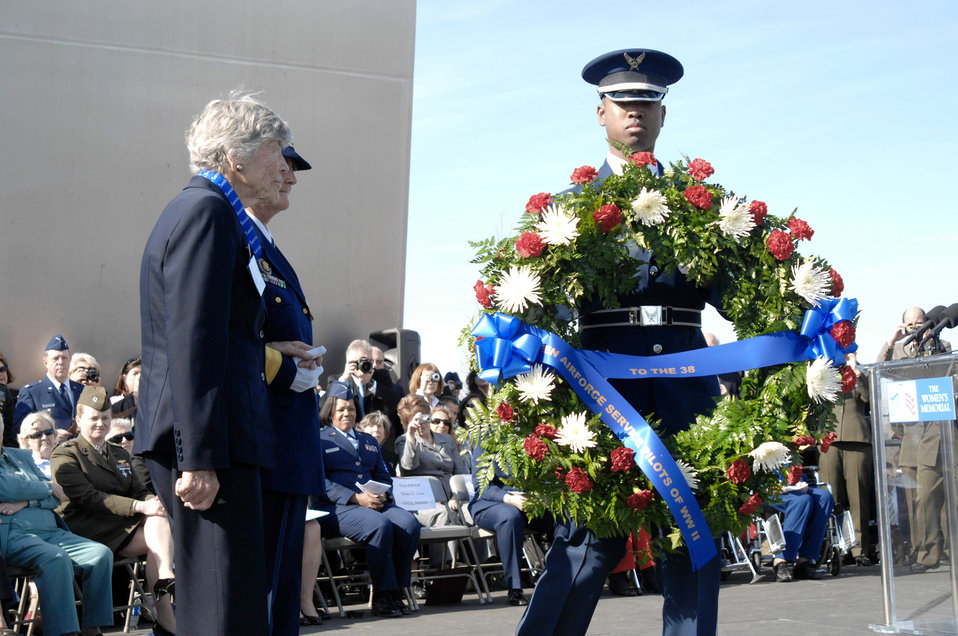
Female World War II pilots lay wreath at Air Force Memorial

Dawn Seymour and retired Coast Guard Vice Adm. Vivien S. Crea are presented a wreath by a member of the Air Force Honor Guard March 9, 2010, in Arlington, Va., to honor the 38 WASP who lost their lives in the line of duty.